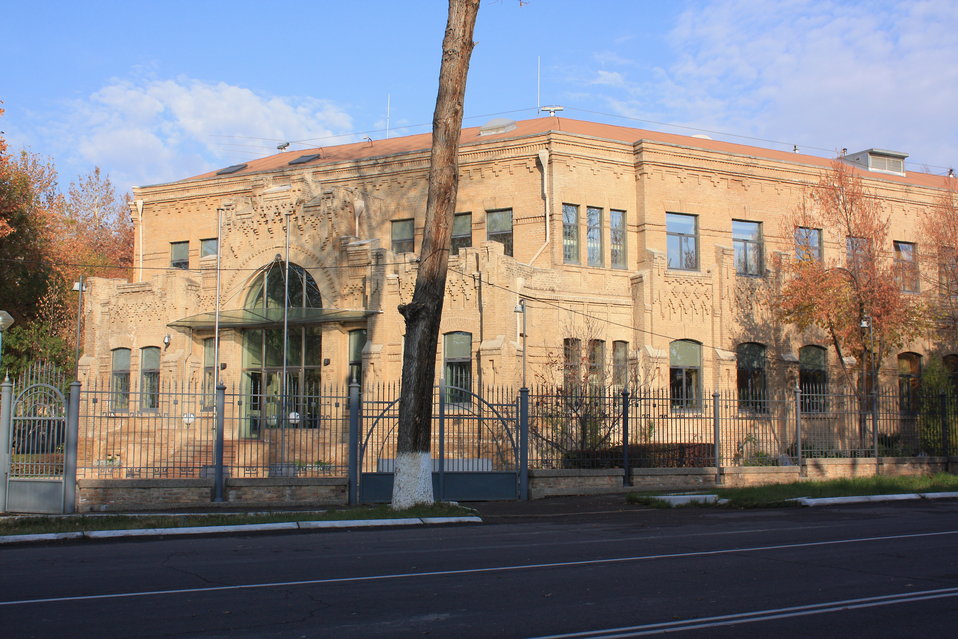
French embassy in Tashkent, Uzbekistan. Fran√ßais†: Ambassade de France √† Tachkent, Ouzb√©kistan.